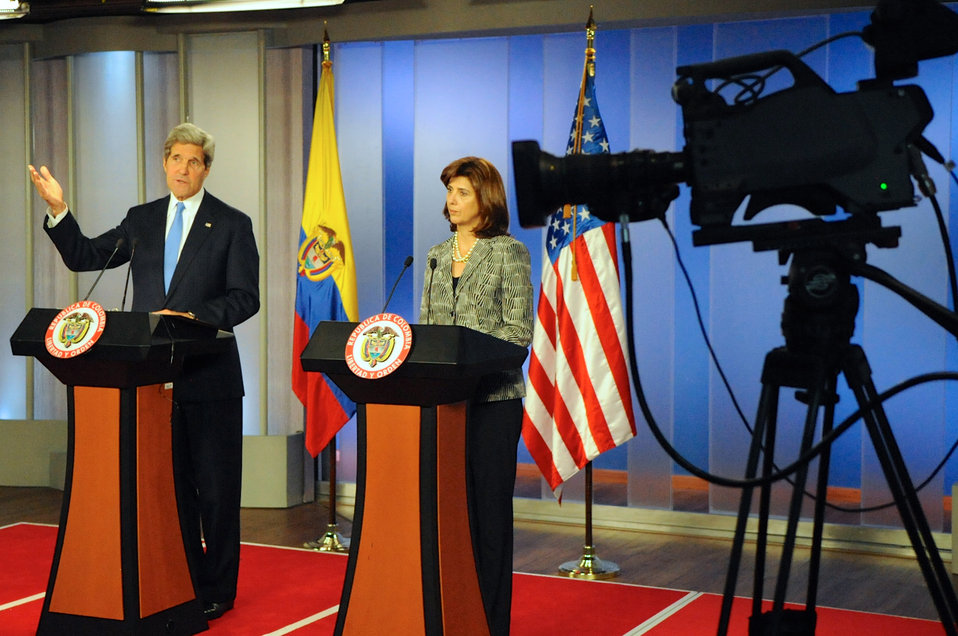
Secretary Kerry and Colombian Foreign Minister Holguin Address Reporters

U.S. Secretary of State John Kerry and Colombian Foreign Minister Maria Angela Holguin address reporters in Bogota, Colombia, on August 12, 2013.